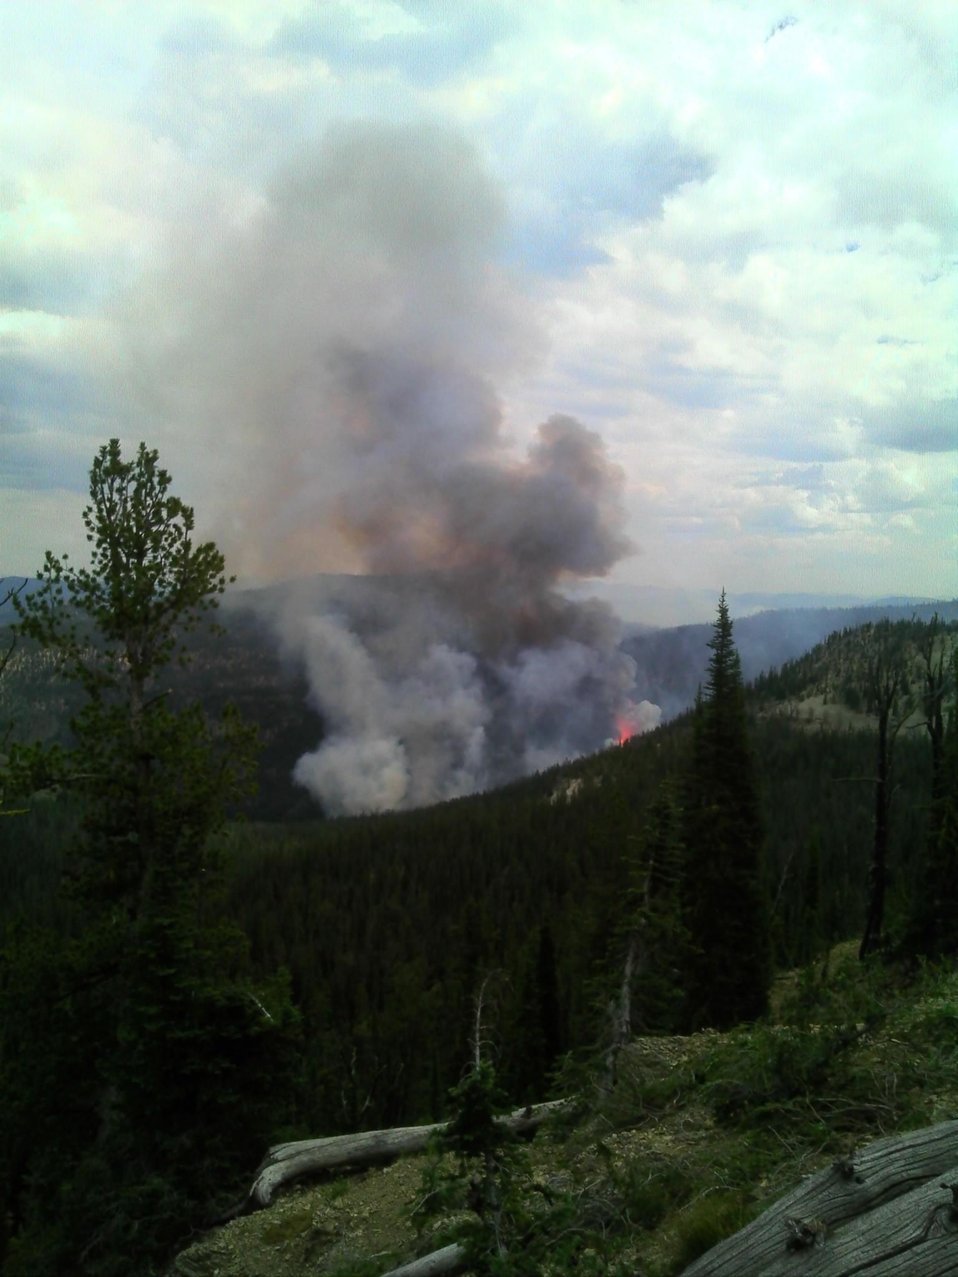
The Thunder City Fire in the Payette National Forest near Stibnite, ID began on Jul. 19, 2013 by lightning and has consumed approximately 1,520 acres and is approximately 15% contained.